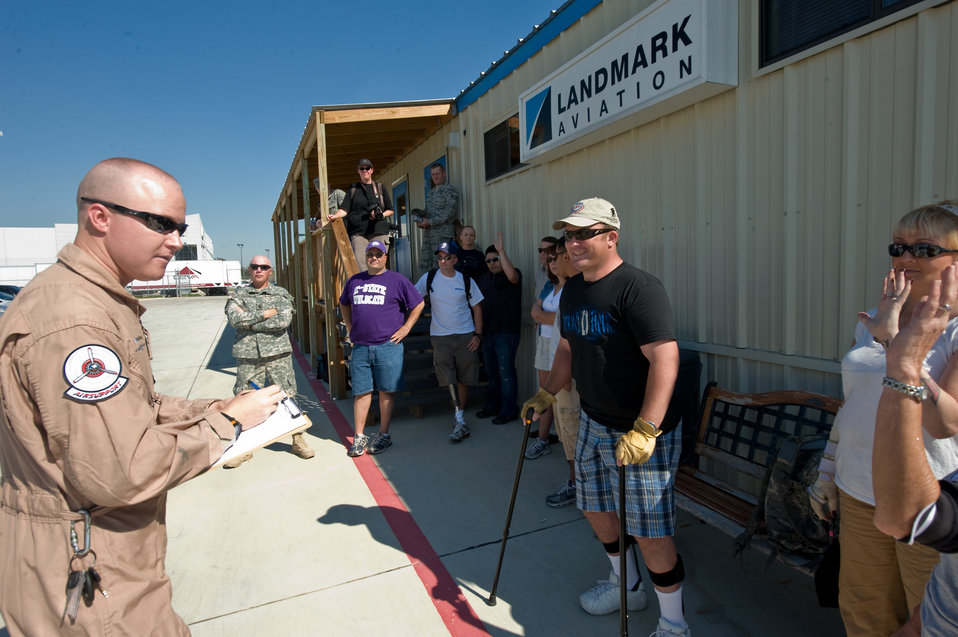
Warrior Flight

Justin Growden of the Disabled American Veterans Flight Team welcomes wounded warriors and their families Nov. 5, 2009, to the San Antonio International Airport for flights on historic military aircraft and experimental acrobatic planes. When he asked who wants to fly in a B-25 Mitchell bomber, hands quickly went up. The wounded warriors are from the Warrior Transition Unit of the San Antonio Military Medical Center at Fort Sam Houston, Texas. Approximately 10 aircrews have come here from across the region to participate in the Randolph Air Force Base